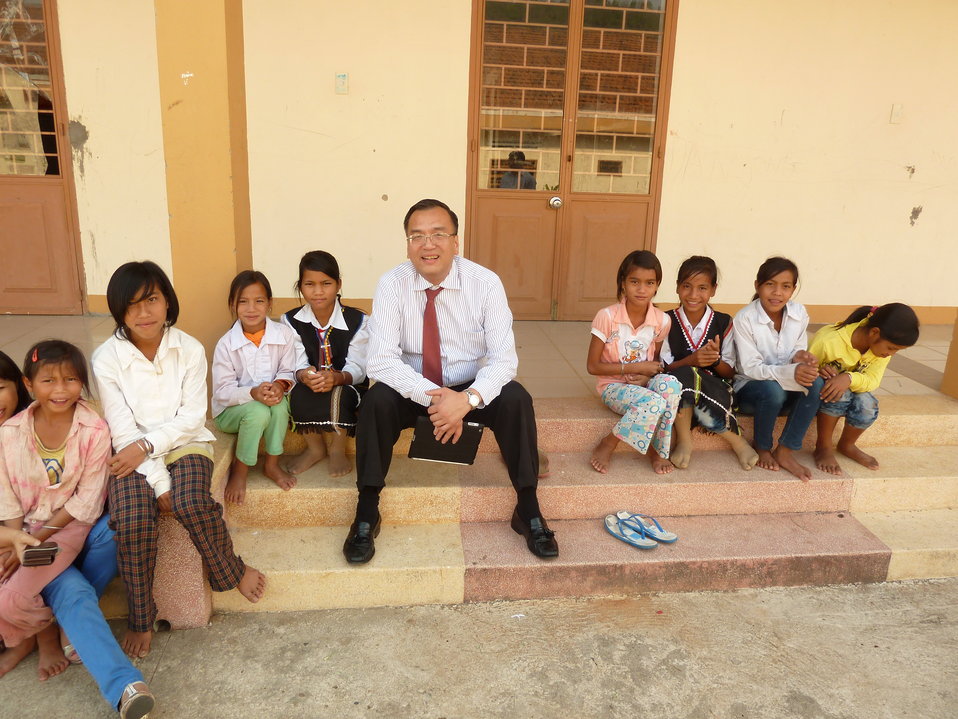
U.S. Consul General Le Thanh An visits with children at the Kon Ray Boarding School